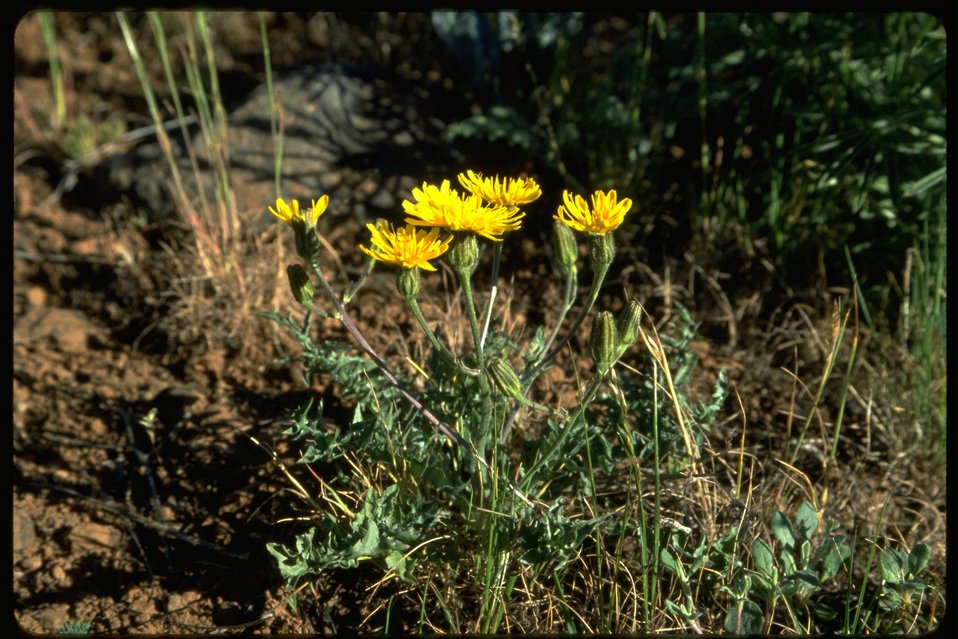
Long shot of wild Dandelion.